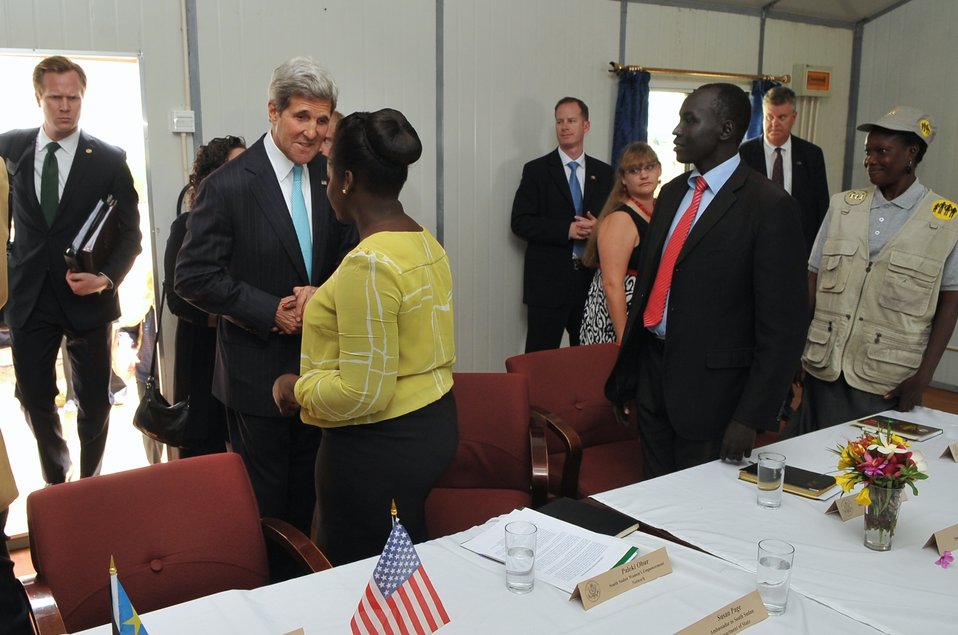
Secretary Kerry Greets With Members of South Sudanese Civil Society

U.S. Secretary of State John Kerry greets several members of the South Sudanese civil society after his meeting with President Salva Kiir Mayardit in Juba on May 2, 2014.